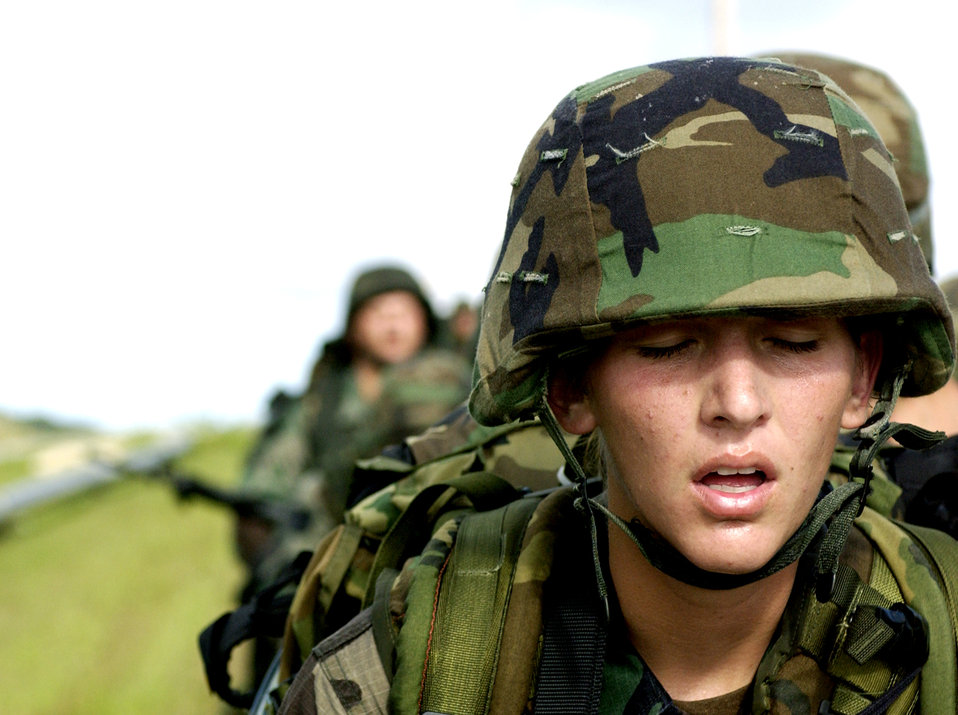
Luggin' a load

ANDERSEN AIR FORCE BASE, Guam -- Staff Sgt. Heather Baylis leads a team on a five-mile hike carrying 50 pounds of equipment and two weapons during the special response team course near here. The six-week course used to trains Airmen in close combat, specialized weapons, building clearing techniques and military operations on urbanized terrain. Sergeant Baylis is assigned to the 613th Contingency Response Group.